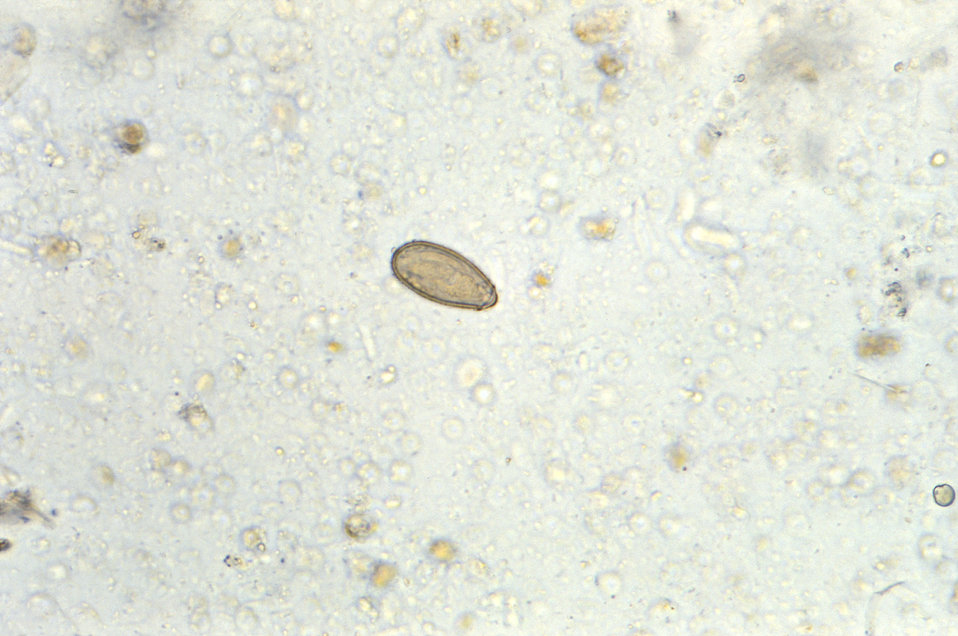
Under a high magnification of 400X, this photomicrograph revealed some of the ultrastructural features displayed by a Clonorchis sinensis egg. C. sinensis is a trematode, or fluke, and is also known as the Chinese, or oriental liver fluke.